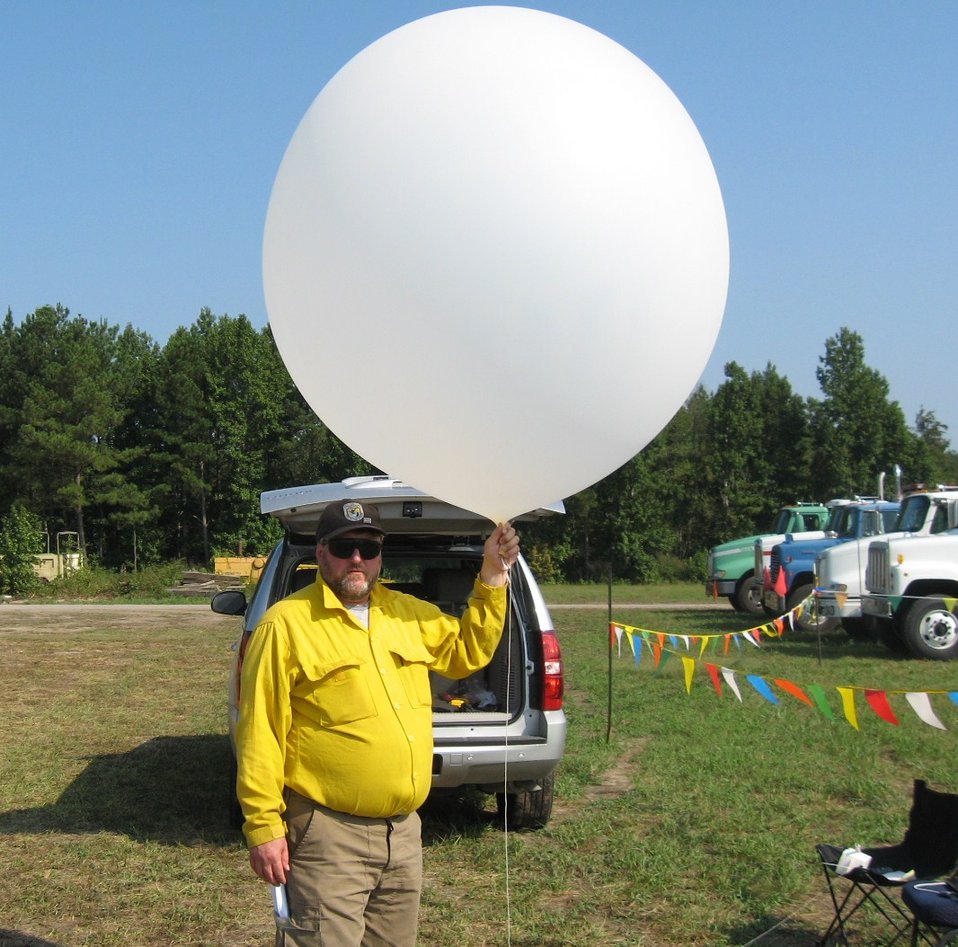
Firefighter with balloon

Suffolk, VA, August 2011: Forecasing weather is important for prediicting wildfire behavior. Mike Durfee, Fire Behavior Analyst on the Lateral West Fire at Great Dismal Swamp National Wildlife Refuge, holds a weather balloon. Durfee is a Fire Management Officer starioned at Wallkill River National Wildlife Refuge.